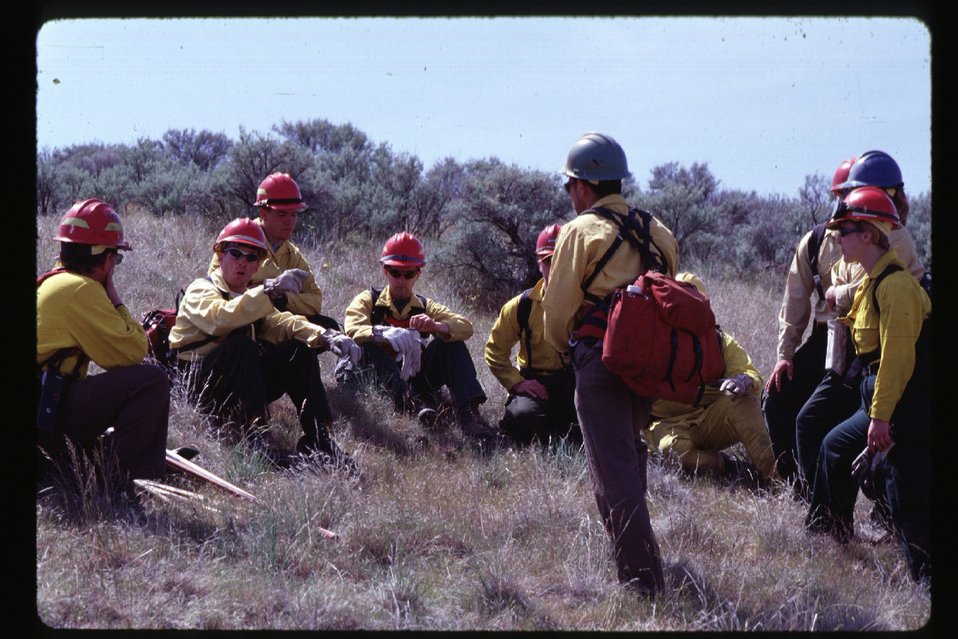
Fire fighters Training Four Rivers Field Office LSRD Lower Snake River District